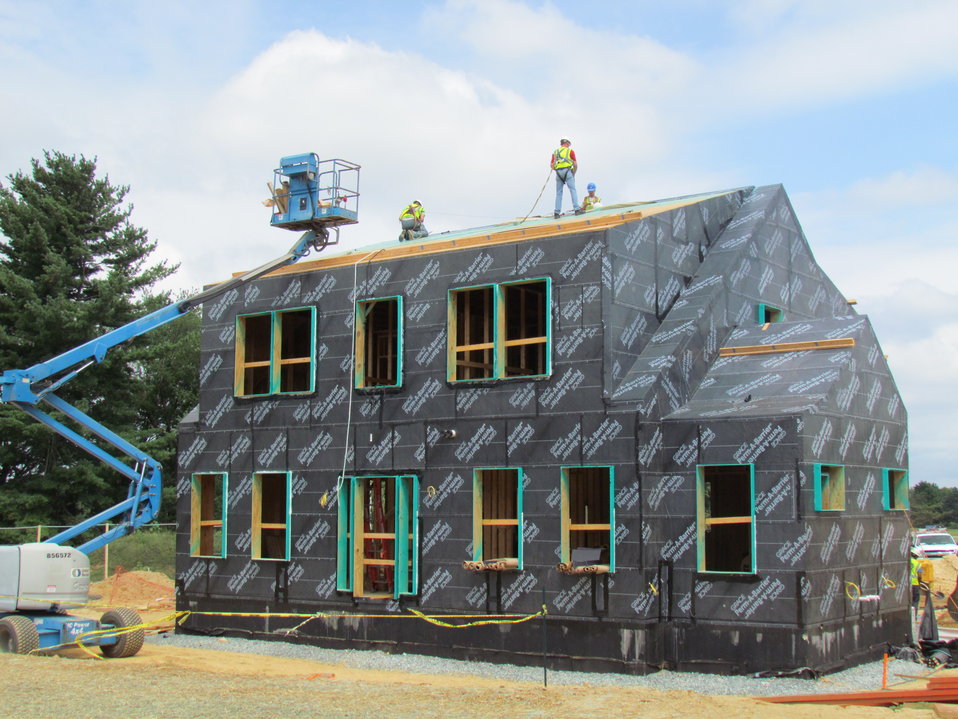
Net-Zero Energy Residential Test Facility - Photo showing air/moisture barrier being installed on main roof. Air/moisture barrier in place on walls. The plywood boxes have been installed in window openings and extend two inches past the exterior wall.